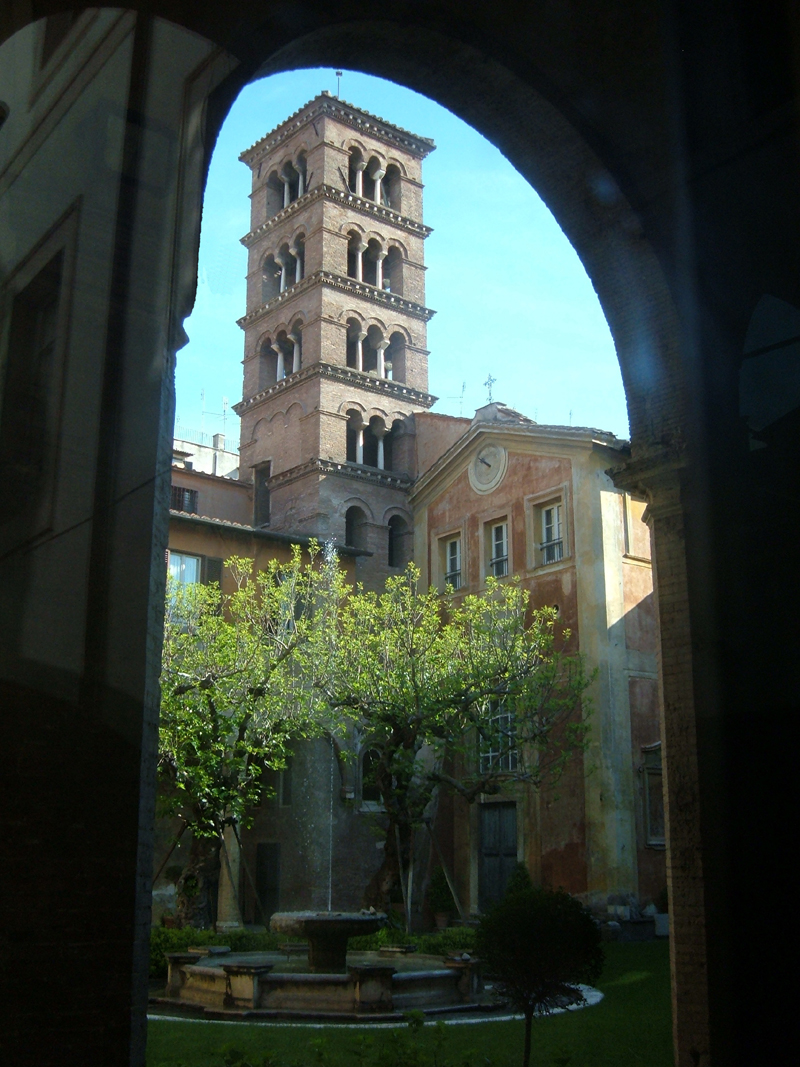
Italiano: Chiesa di San Gregorio Nazianzeno, a Roma, nel rione Campo Marzio. Foto personale.